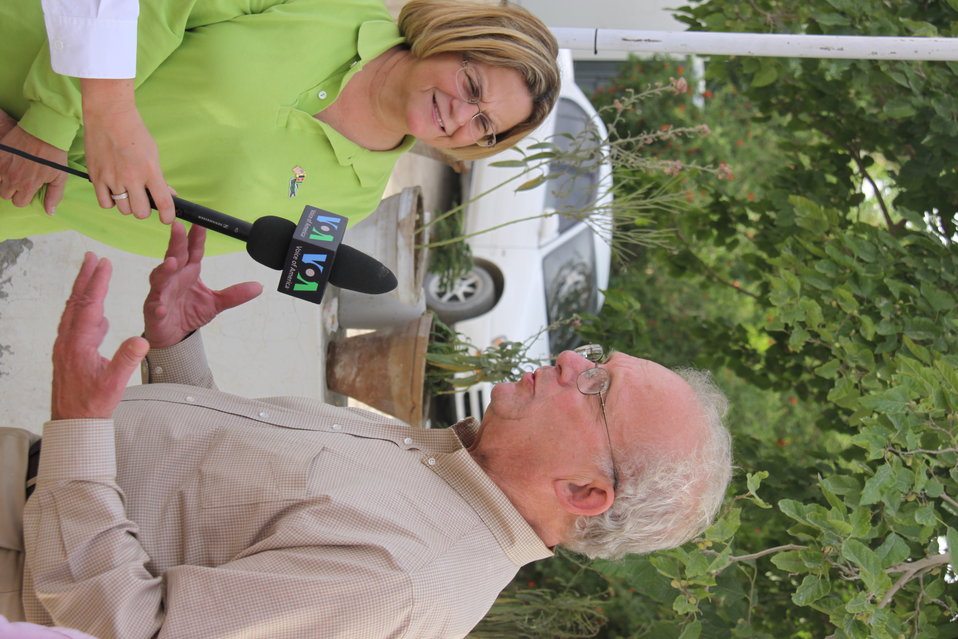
Meeting with Local Leaders in Kandahar